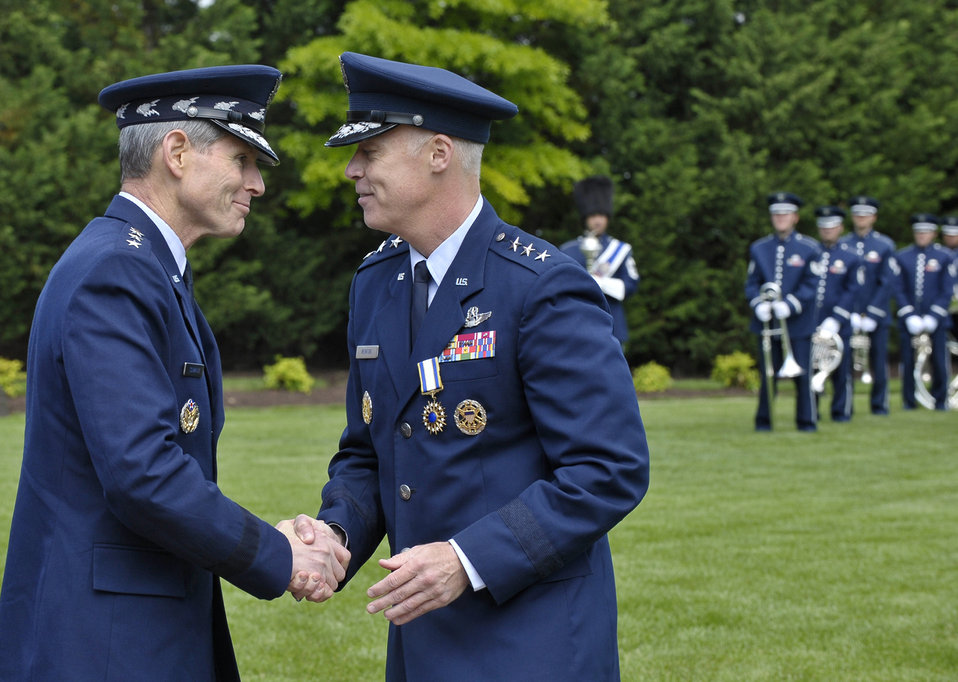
Senior Leader Retirement

Air Force Chief of Staff Gen. Norton Schwartz congratulates Lt. Gen. Richard Y. Newton III, Assistant Vice Chief of Staff and Director, Air Staff, Headquarters U.S. Air Force, after retiring Newton at a ceremony on Joint Base Anacostia-Bolling, D.C., on April 27, 2012.